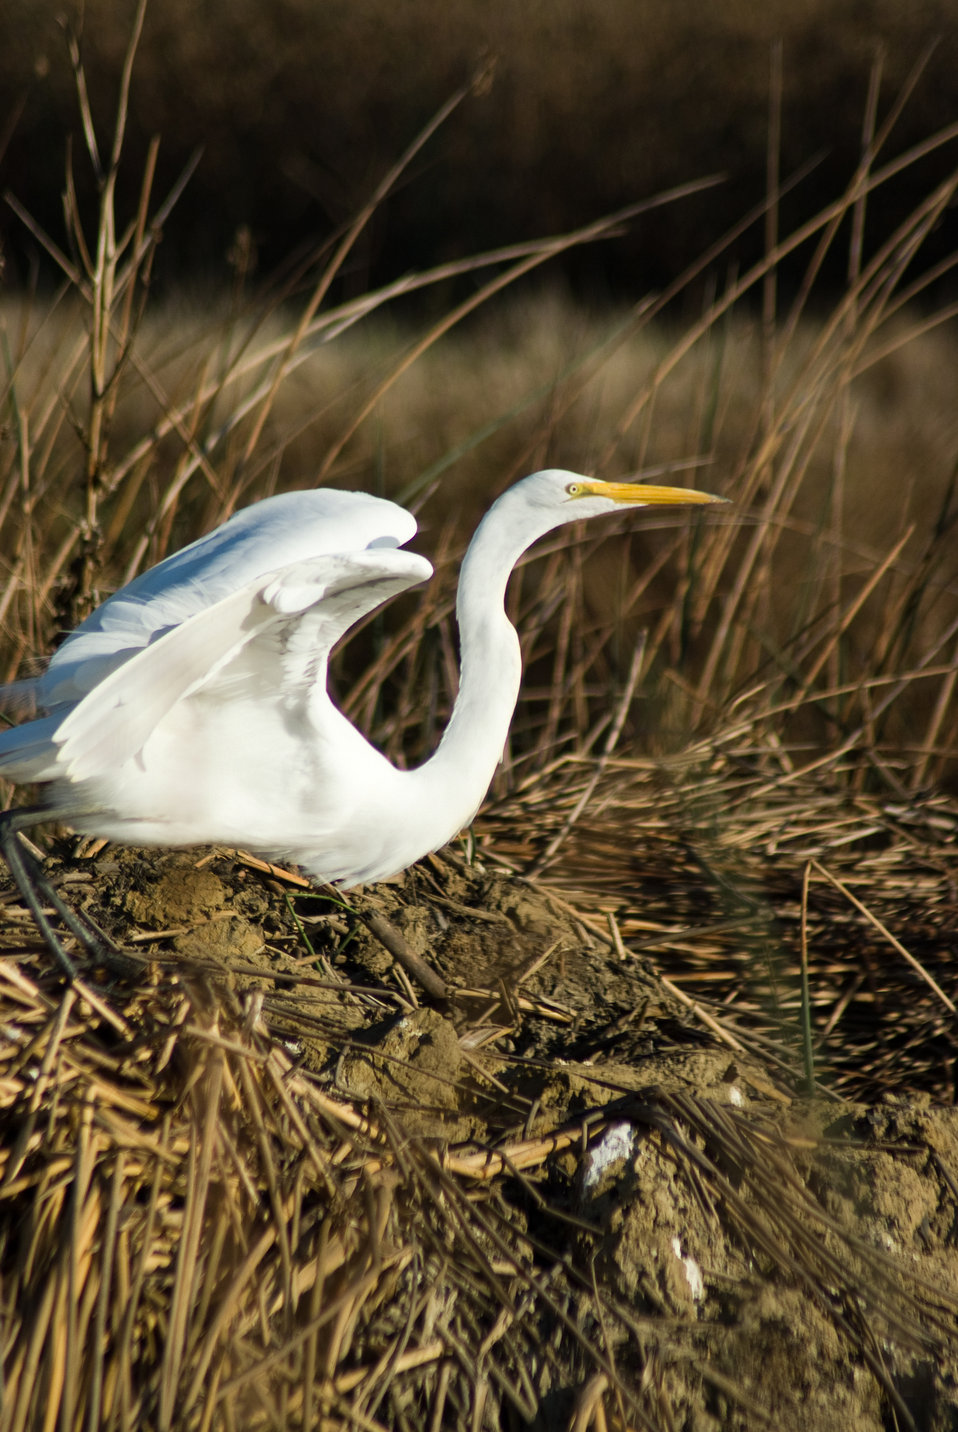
great egret

Sacramento National Wildlife Refuge, CA
Photo: Justine Belson, USFWS

Sacramento National Wildlife Refuge
Oct. 2010 Great Egret